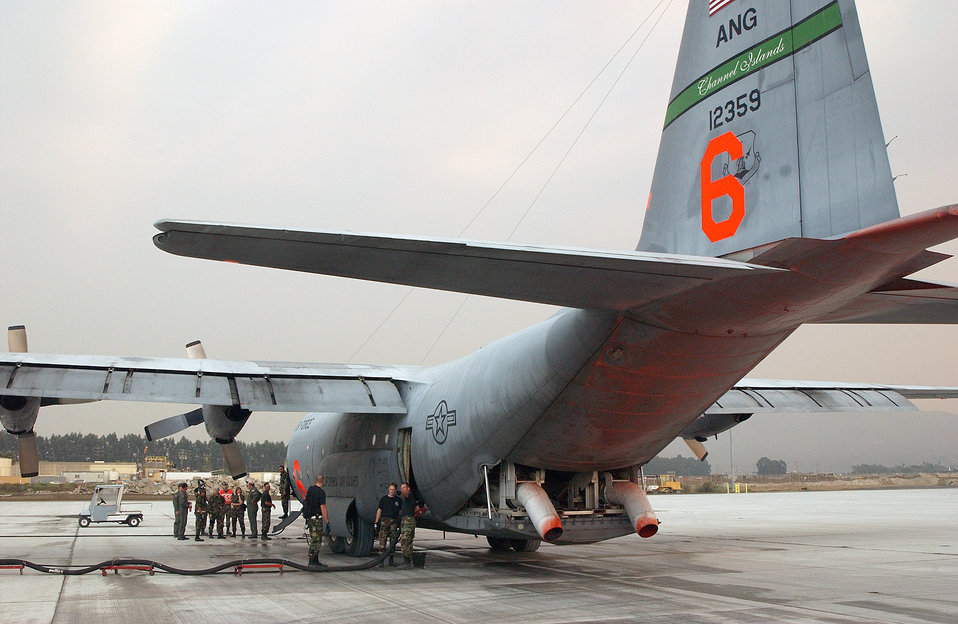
California Fires

CHANNEL ISLANDS AIR NATIONAL GUARD STATION, Calif. -- A C-130 equipped with a modular airborne firefighting system helped fight wildfires in Southern California. Pentagon officials released the deployed aircraft and airmen back to their home bases Nov. 2.